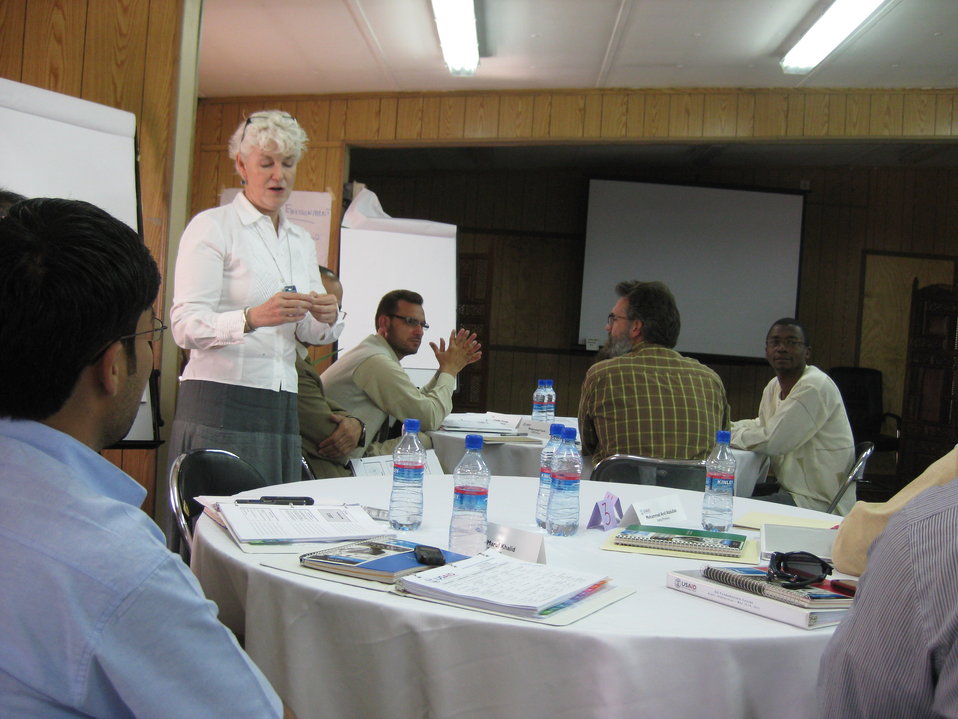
Afghan Youth Voices 037